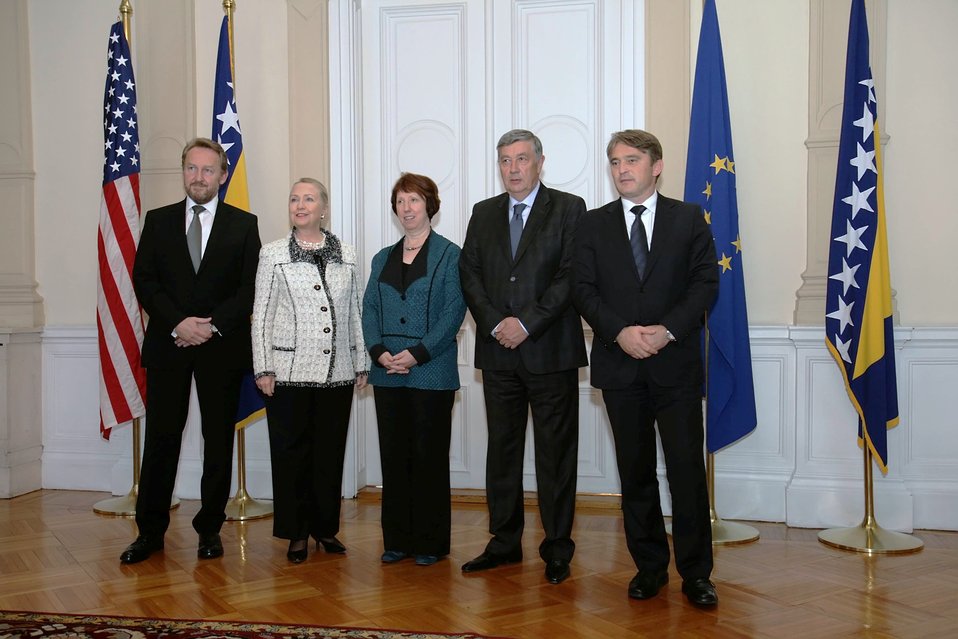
Secretary Clinton Poses for a Photo With Members of the Bosnian Presidency Izetbegovic, Komsic, and Radmanovic, and EU High Representative Ashton

From left to right, Chairman of the Presidency of Bosnia and Herzegovina Bakir Izetbegovic, Secretary of State Hillary Rodham Clinton, EU High Representative Catherine Ashton, Bosnia and Herzegovina Presidency Member Nebojsa Radmanovic, and Bosnia and Herzegovina Presidency Member Zeljko Komsic pose for a photo at the Presidency Building in Sarajevo, Bosnia and Herzegovina, October 30, 2012.